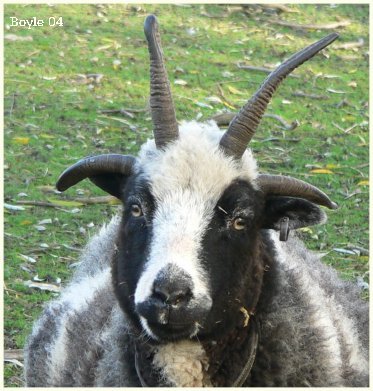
This photo was taken of an older ewe breed by Colleen and Tom Kozlowski. It is a digital image of a registered Jacob ewe with four horns. This shot was taken by Beth Maxwell Boyle in western New York State, USA in 2004.